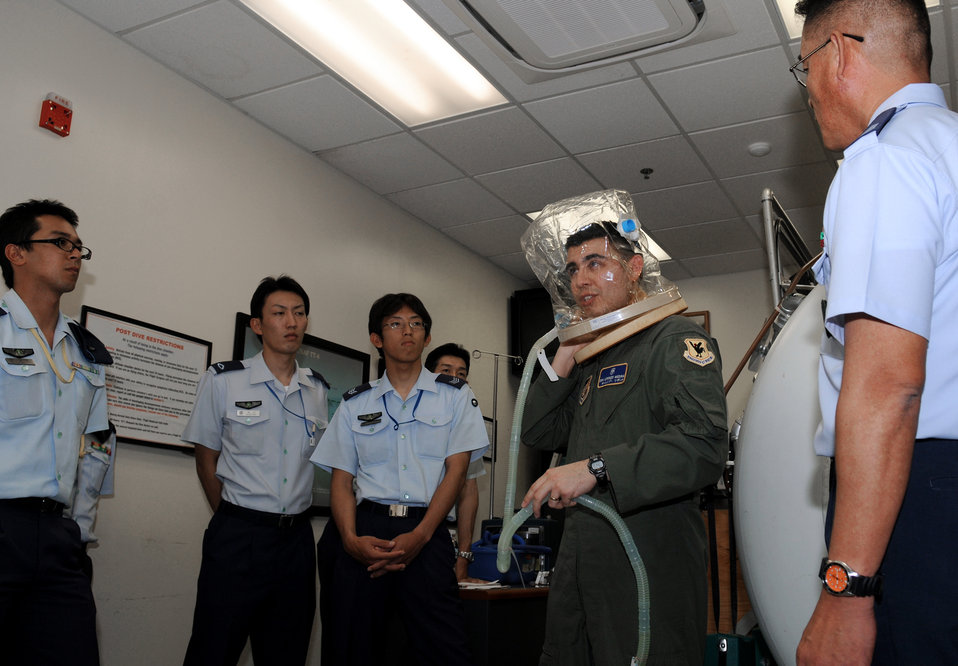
Kadena conducts bilateral cultural exchange

Senior Airman Lorenzo Medina explains how the hypobaric simulates the effects of high altitude on the human body to visiting enlisted Japan Air Self Defense Force members April 15 as part of the bilateral exchange program at Kadena Air Base, Japan. The Airman is with the physiology operations element at the 18th Aerospace Medical Squadron.